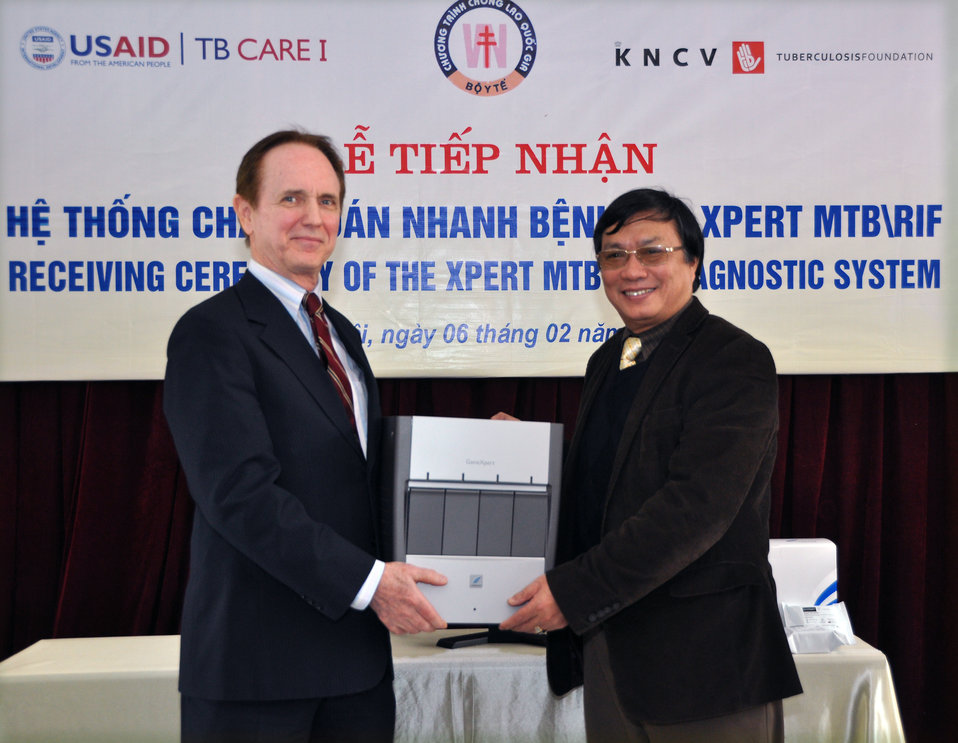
Prof. Dr. Dinh Ngoc Sy, manager of Vietnam's National TB Control Program (right), receives an Xpert Testing System from USAID Mission Director, Francis Donovan.

USAID delivers TB and MDR-TB diagnostic equipment